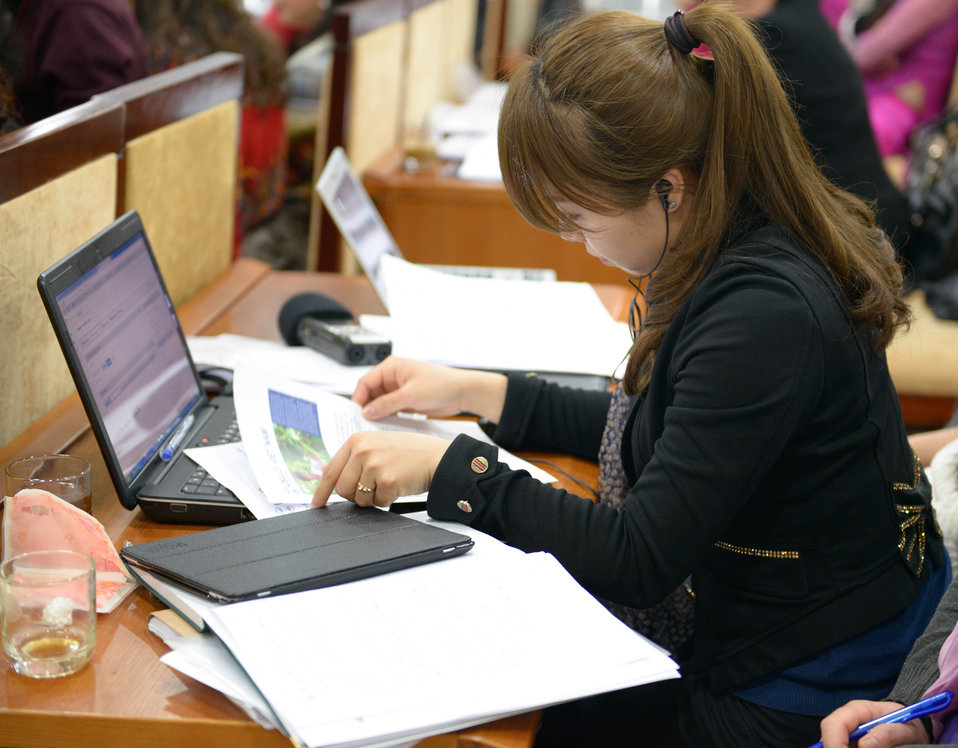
International Women's Day Seminar for female entrepreneurs

Phu Tho, Vietnam. March 1, 2014.